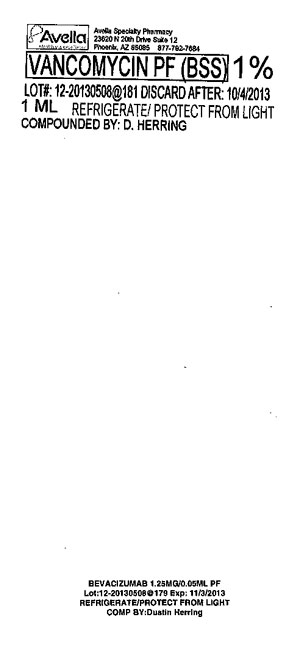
RECALLED – Bevacizumab 1.25 mg/0.05 mL PF and Vancomycin PF (BSS) 1%

September 9, 2013 – Avella Specialty Pharmacy Issues Voluntary Nationwide Recall of Two Medications Due to Concerns of Sterility Assurance at Testing Vendor.